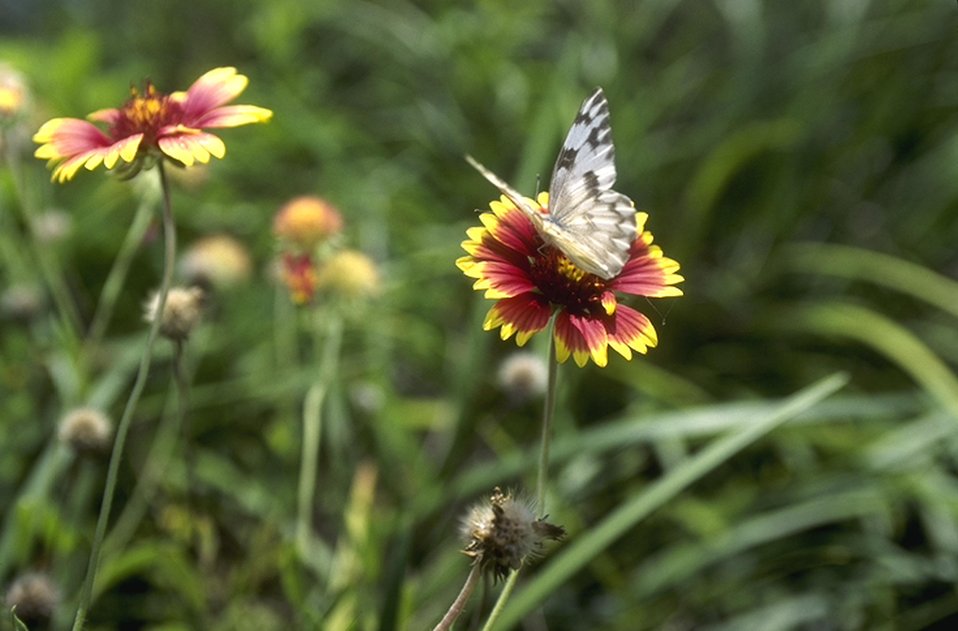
A monarch butterfly collects nectar from a flower. Butterflies are one of nature’s many pollinators for flowers and crops and are crucial in production for fruits and vegetables.